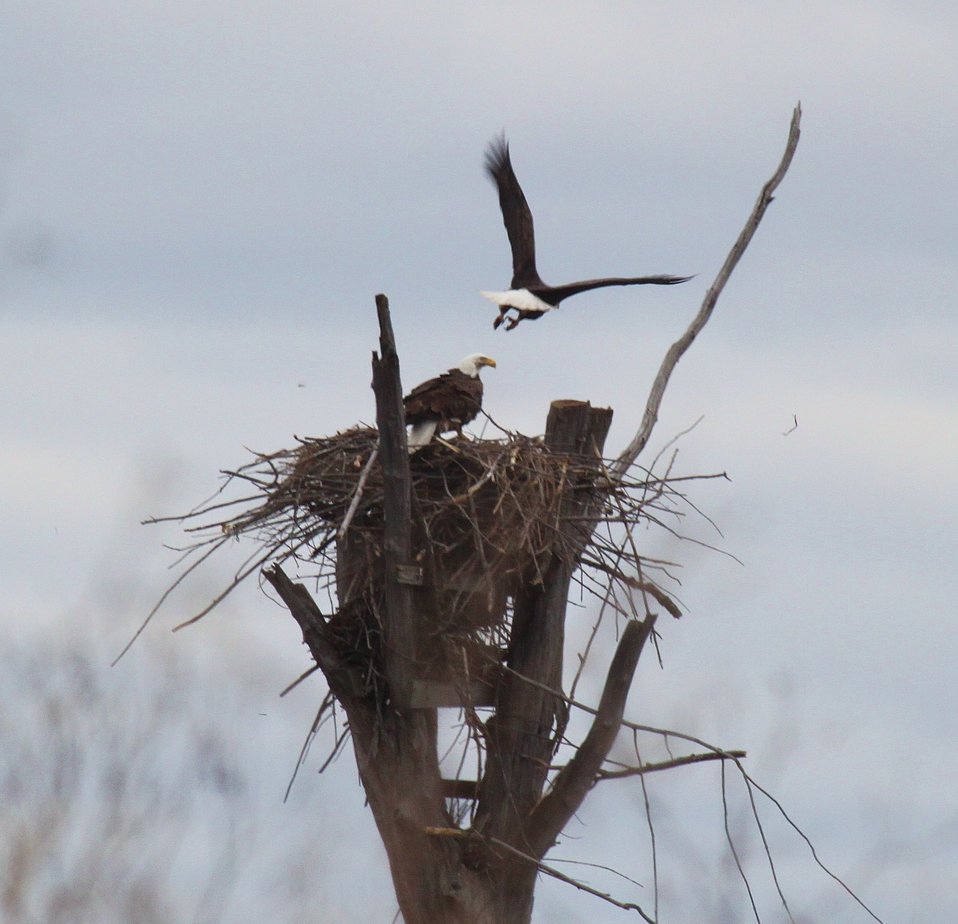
Bald eagles nesting

For the second year in a row, Missisquoi NWR provides nesting habitat for bald eagles.

Credit: ken sturm/USFWS